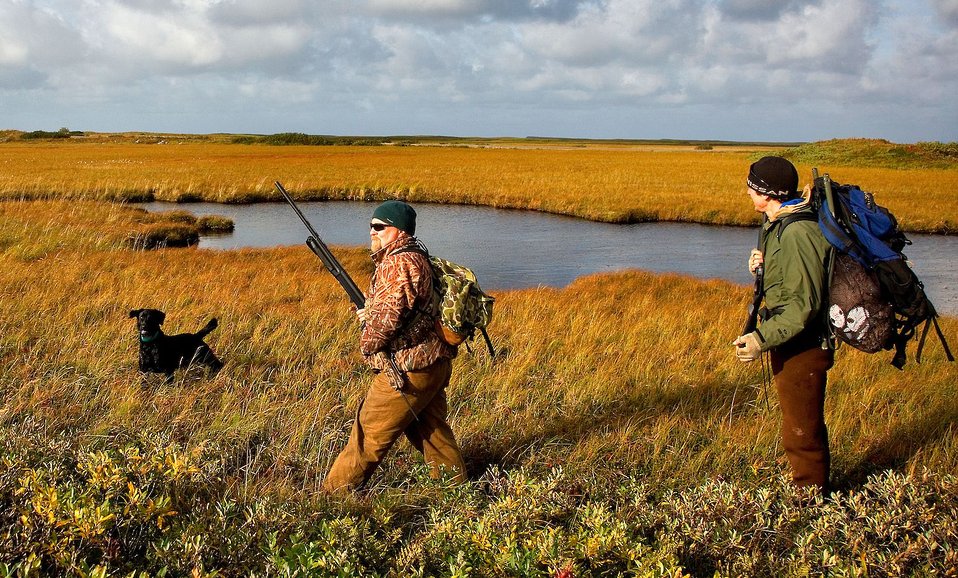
Izembek Refuge

Hunters at Izembek National Wildlife Refuge, AK.